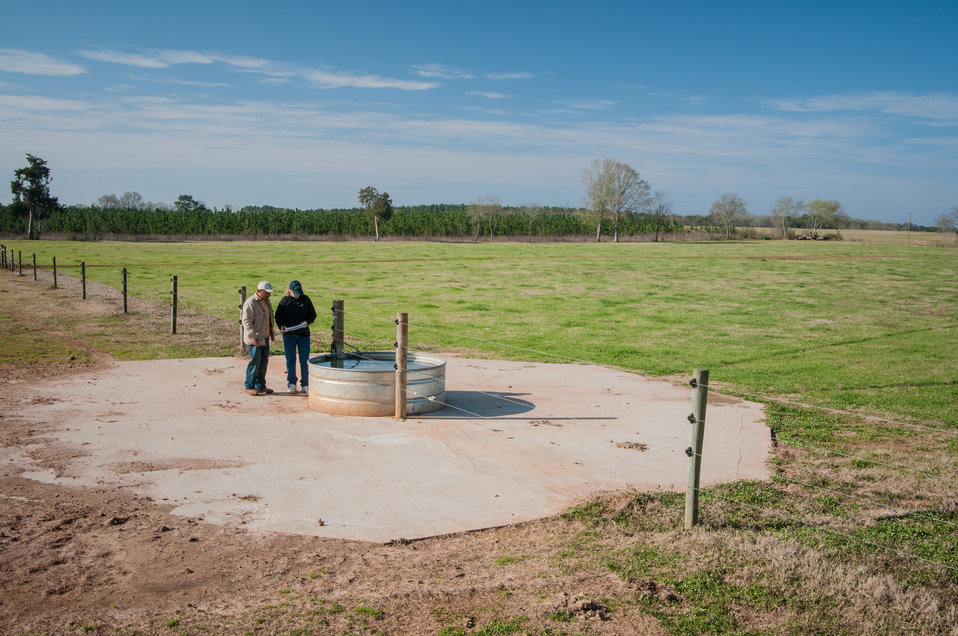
Banamacc Farms owner Raul Moreno and U.S. Department of Agriculture (USDA) National Resources Conservation Service (NRCS) Soil Conservation Technician Lynne Roney review Moreno's conservation plan for a heavy use area around a watering trough in his pasture in Edison, Calhoun County, GA on Mar. 7, 2013. Moreno was able to secure funding for the improvements with a USDA NRCS Environmental Quality Incentive Program (EQIP) contract. Moreno mentioned, “NRCS provided me with specifications and designs that assisted me in installing conservation practices that will last for many years to come.” The USDA Strike Force Initiative has designated Calhoun County, GA as a Strike Force county selected to receive assistance to relieve persistent poverty in historically high-poverty counties.